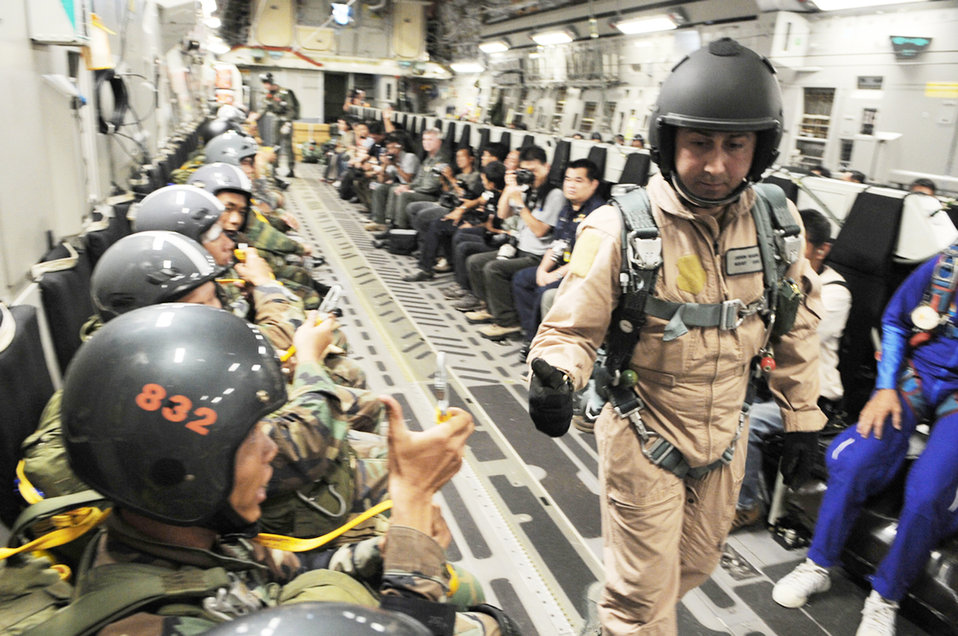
COPE TIGER 2010

Master Sgt. John Gaonagives the